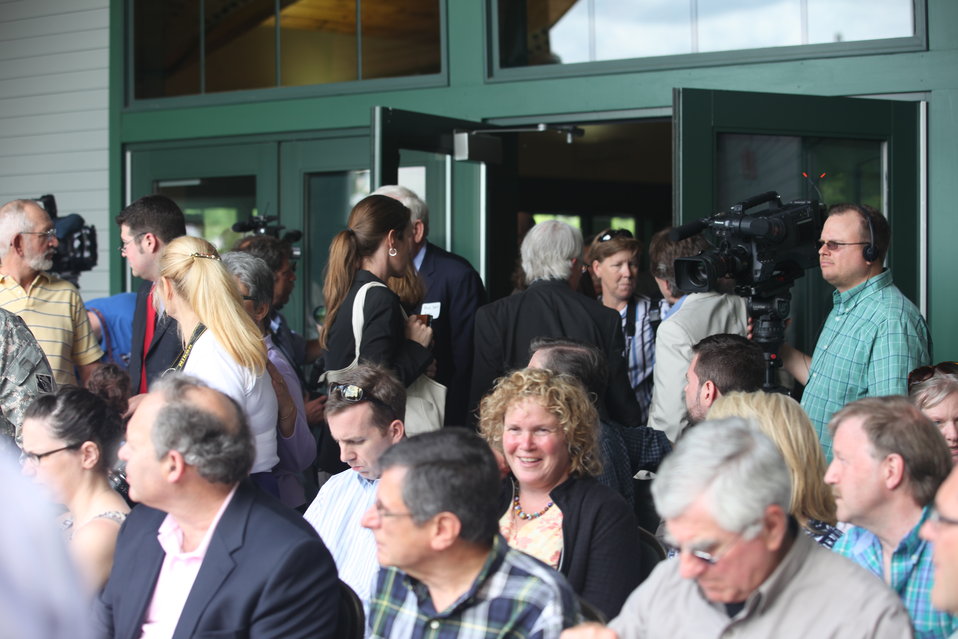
crowd pic

A view of some of the audience and media in attendance.